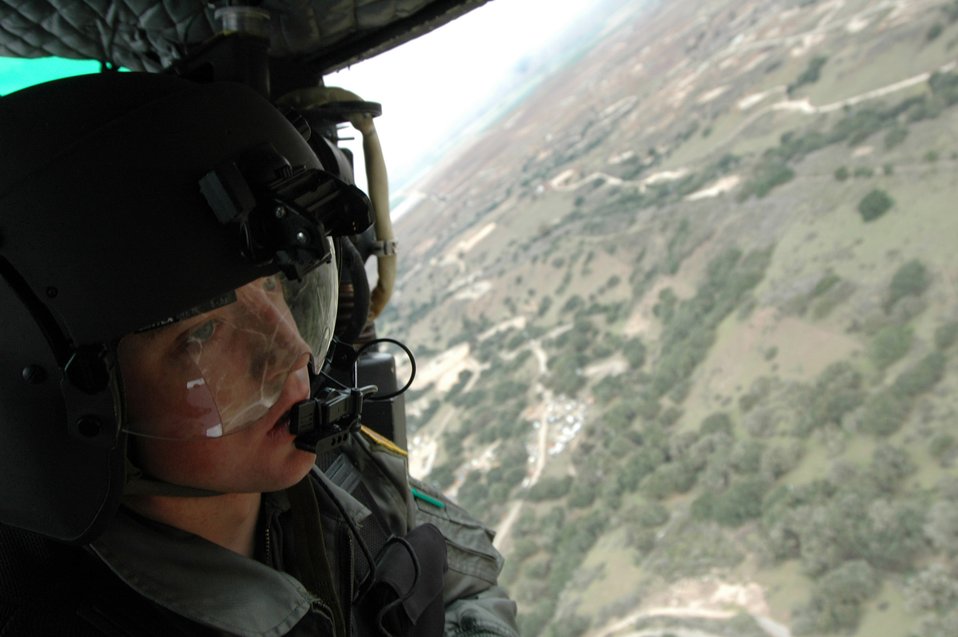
Airmen help detect, seize drug plants

VANDENBERG AIR FORCE BASE, Calif. (AFPN) -- A 76th Helicopter Squadron Airman surveys the coastal landscape during a Joint Task Force North mission. In 2005, the squadron helped federal and civilian law enforcement agencies detect and seize more than one million marijuana plants.